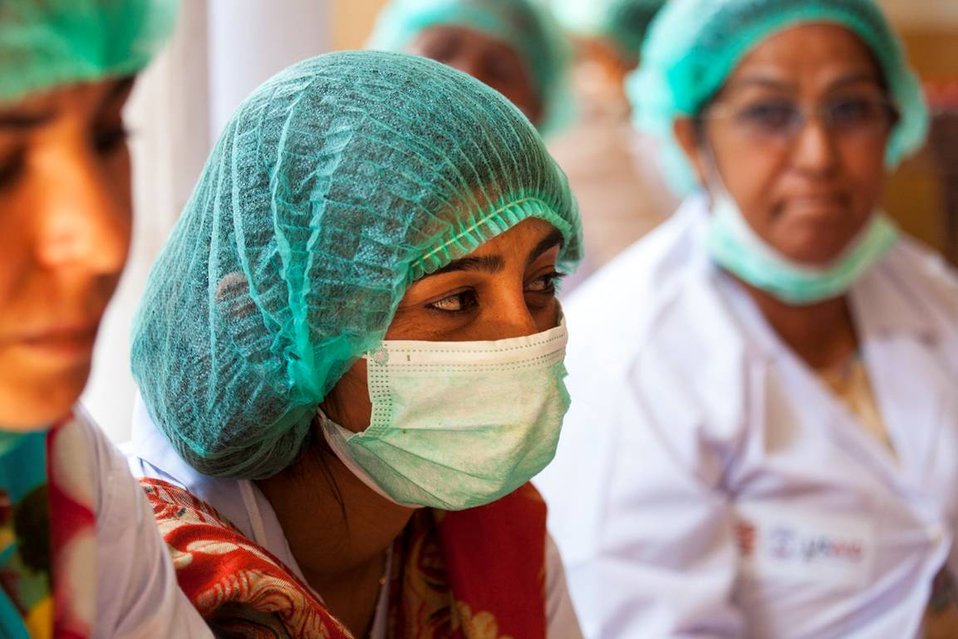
USAID's Agribusiness Project Women FEG for Food Processing - Pickle Production at Village Jabbi

www.usaid.gov/pk/db/sectors/growth/project 750.html